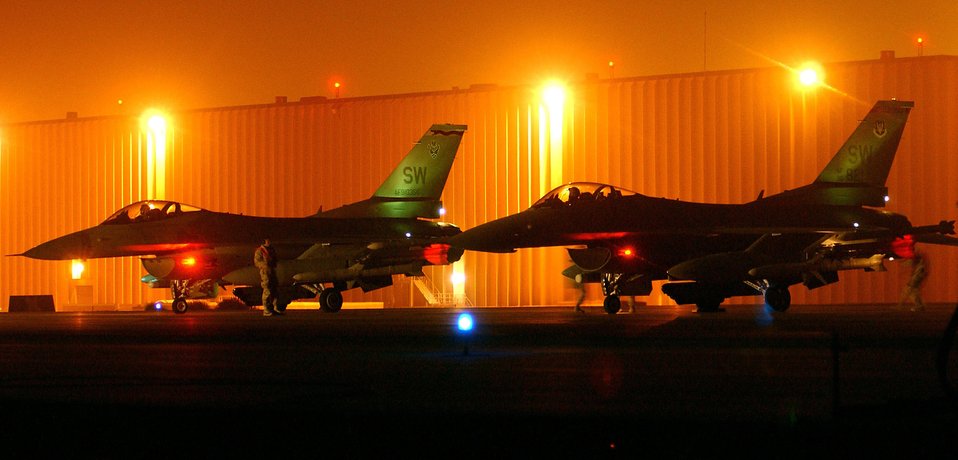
Jan. 21 airpower summary: F-16s destroy house-borne device

F-16 Fighting Falcons wait on the